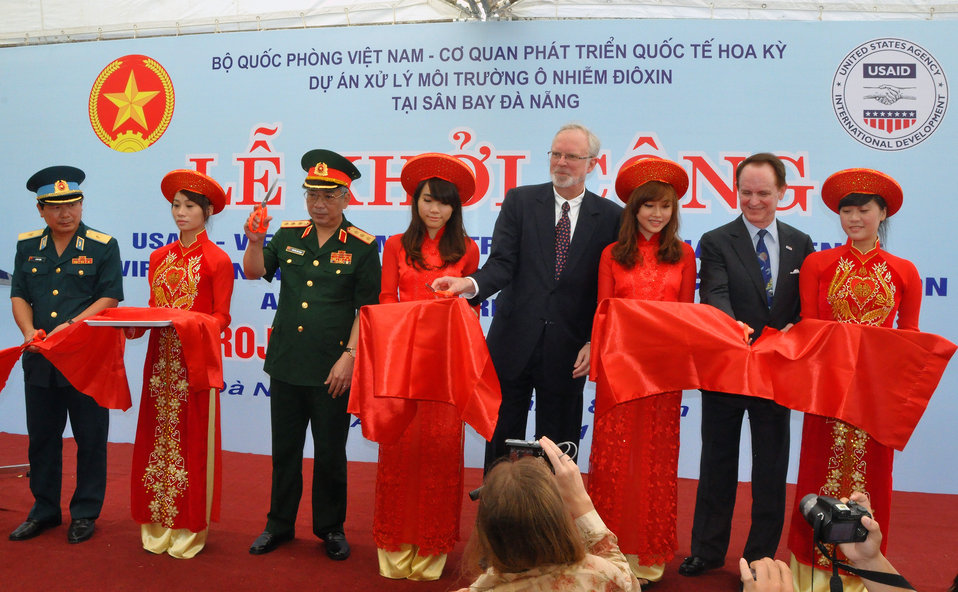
Environmental Remediation of Dioxin Contamination at Danang Airport Project Launch

Danang, August 9, 2012